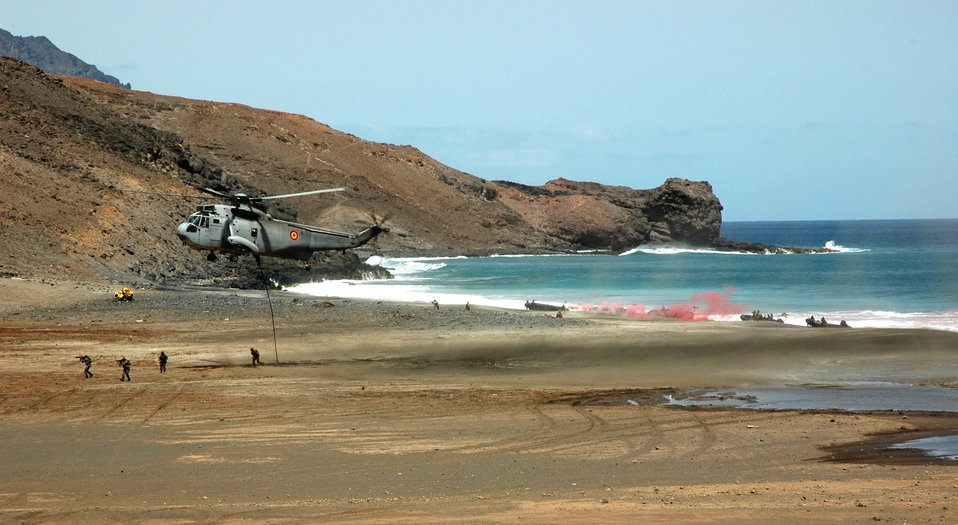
NATO troops exercise at Steadfast Jaguar

A simulated amphibious and land assault is conducted in Sao Vicente, Cape Verde, on Friday, June 23, to demonstrate NATO's show of force during Exercise Steadfast Jaguar. More than 7,000 NATO servicemembers from land, maritime and air components are participating in the exercise, which ends today.